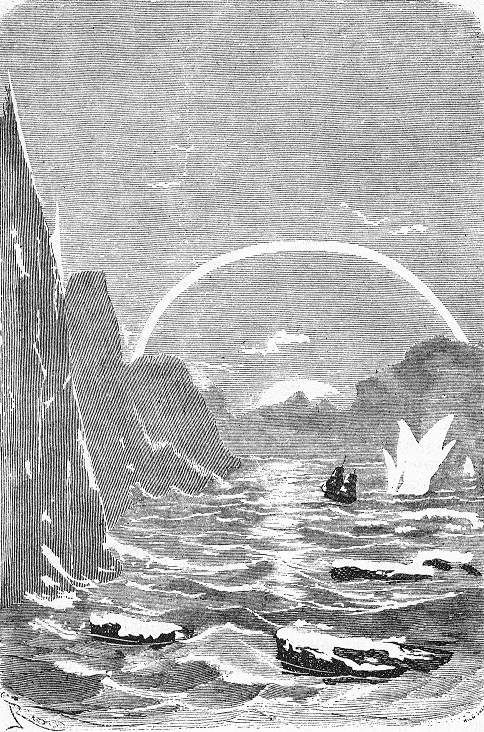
An illustration from Jules Verne's novel 'Journeys and Adventures of Captain Hatteras', part I: 'The English at the Noth Pole' drawn by Édouard Riou and/or Henri de Montaut. Polski: Ilustracja powieści Juliusza Verne'a 'Podróże i przygody kapitana Hatterasa', części I: 'Anglicy na Biegunie Północnym' autorstwa Édouarda Riou i/lub Henri de Montauta. Français : Jules Verne: 'Voyages et aventures du capitaine Hatteras - Les Anglais au Pôle Nord', Édouard Riou et Henri de Montaut.